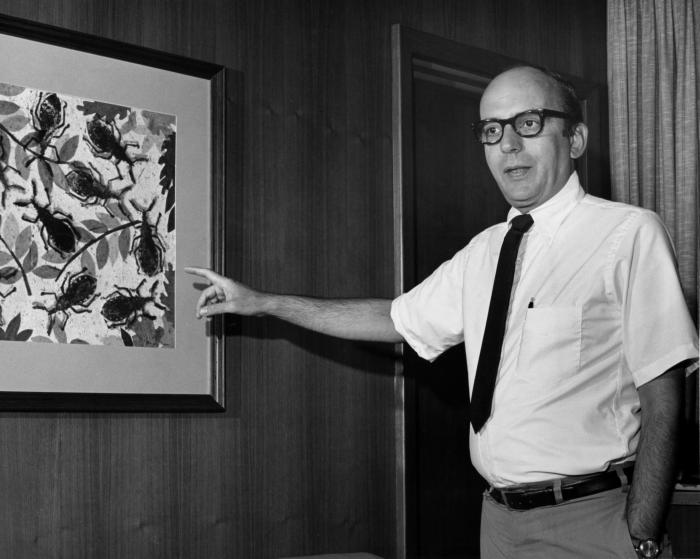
This historic photograph showed the former Centers for Disease Control (CDC) Director, David J. Sencer, M.D., M.P.H., during his Directorship, in his office as he was pointing to a piece of artwork depicting what appear to be Triatomine sp., or 'kissing bugs', which are known to transmit "Chagas disease". Dr. Sencer held the CDC Director's position from 1966 until 1977.